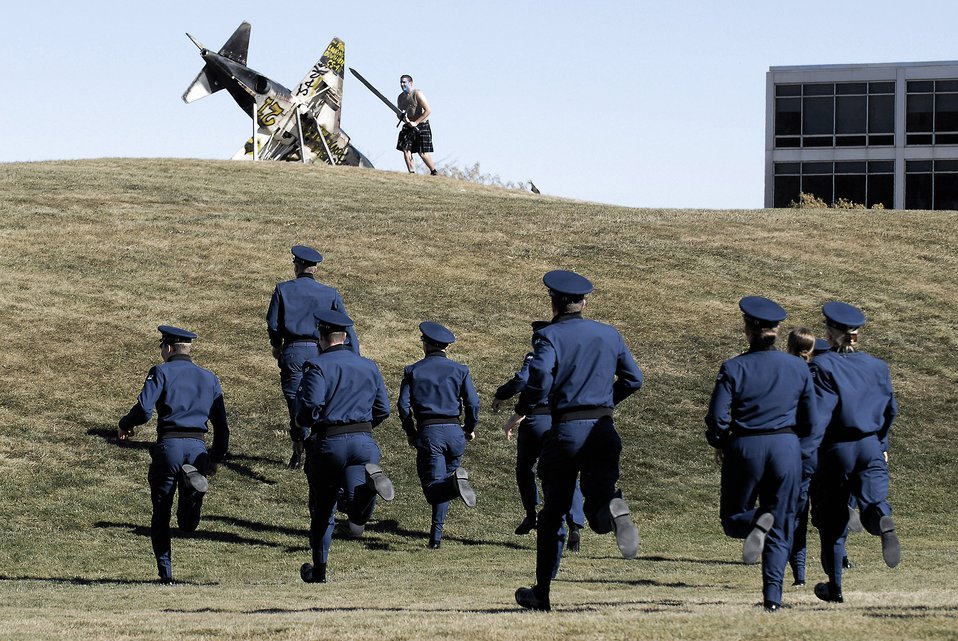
Braveheart

Members of the class of 2012 storm Spirit Hill during the Halloween Formation Oct 29.